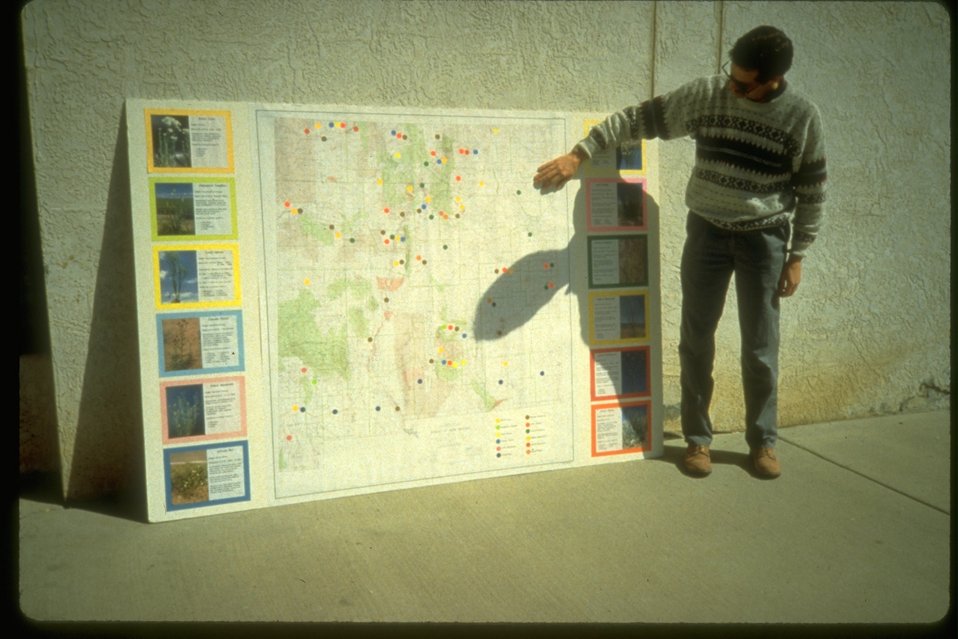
Man ponting at weed inventory map.